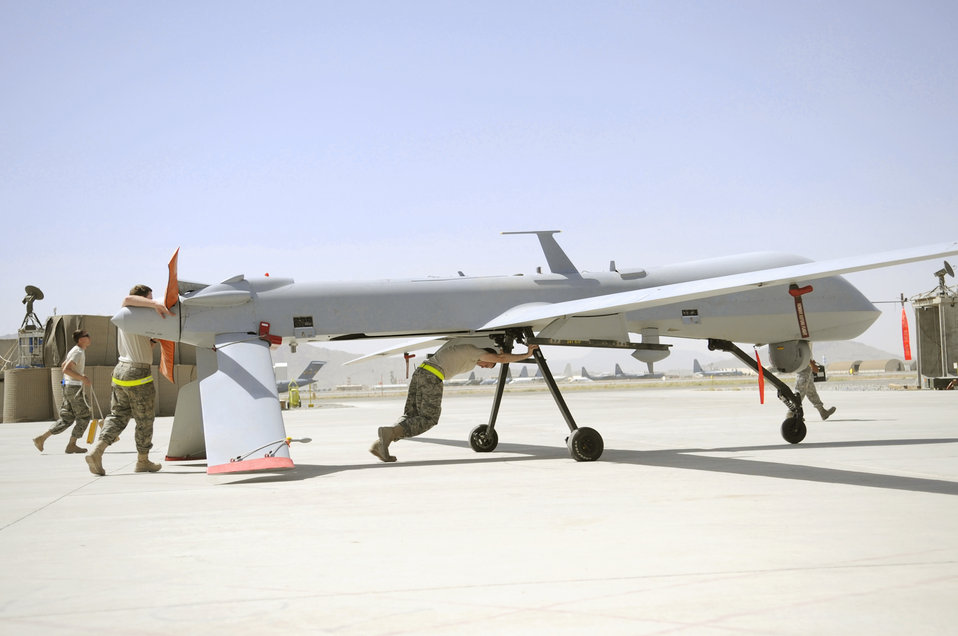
Airmen reach 250K flying hours with remotely piloted aircraft

Members of the 451st Expeditionary Aircraft Maintenance Squadron unit push an MQ-1 Predator toward a hangar for a routine maintenance inspection shortly after landing June 8, 2010, at Kandahar Airfield, Afghanistan.